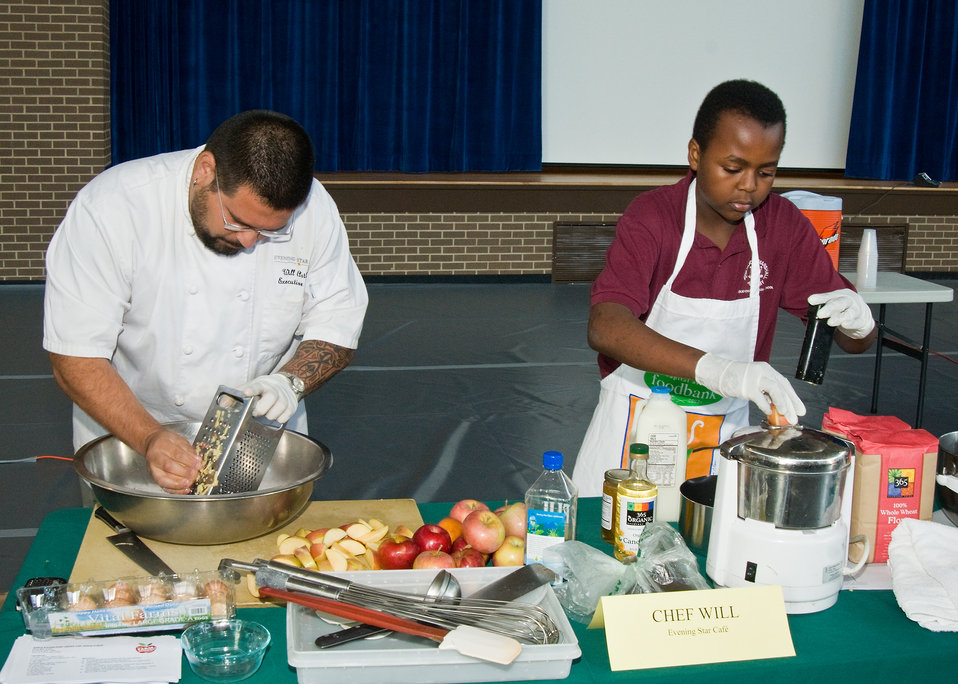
Chef Will Artley (left), 'Evening Star Cafe' and Darvel Suggs a sophomore at Thurgood Marshall Academy prepare, 'Apple Raisin Flap Jacks with Apple Syrup' for the Chef Competition of the D.C. Farm to School and D.C. School Garden Week at the Savoy Elementary and Thurgood Marshall Academy shared campus in Washington, DC, Tuesday, October 12, 2010. At the event related to the Iron Chef competition local chef’s and student sous chef’s created healthy, delicious recipes using local apple varieties to be judged by the students themselves. School children and a partnership of community organizations have responded to First Lady Michelle Obama’s goal to end childhood obesity by building school gardens, providing healthier foods in school meals, and helping kids connect with local food and agriculture. USDA Photo 10di1522-38 by Bob Nichols.